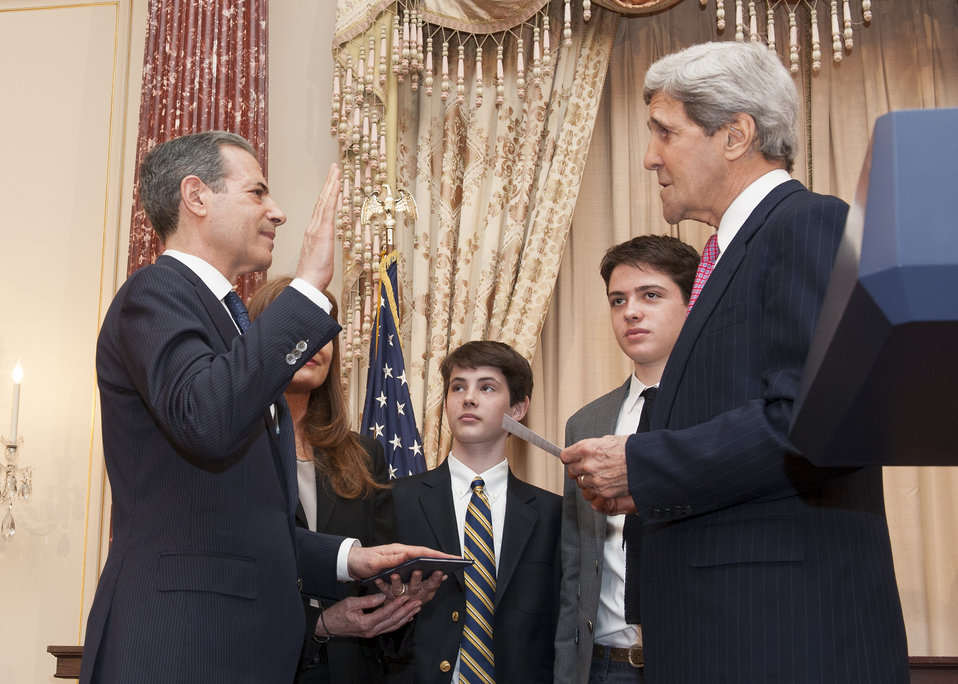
Secretary Kerry Swears in Rick Stengel as Under Secretary

With his family looking on, U.S. Secretary of State John Kerry swears in Rick Stengel as Under Secretary for Public Diplomacy and Public Affairs at the U.S. Department of State in Washington, D.C., on April 15, 2014.